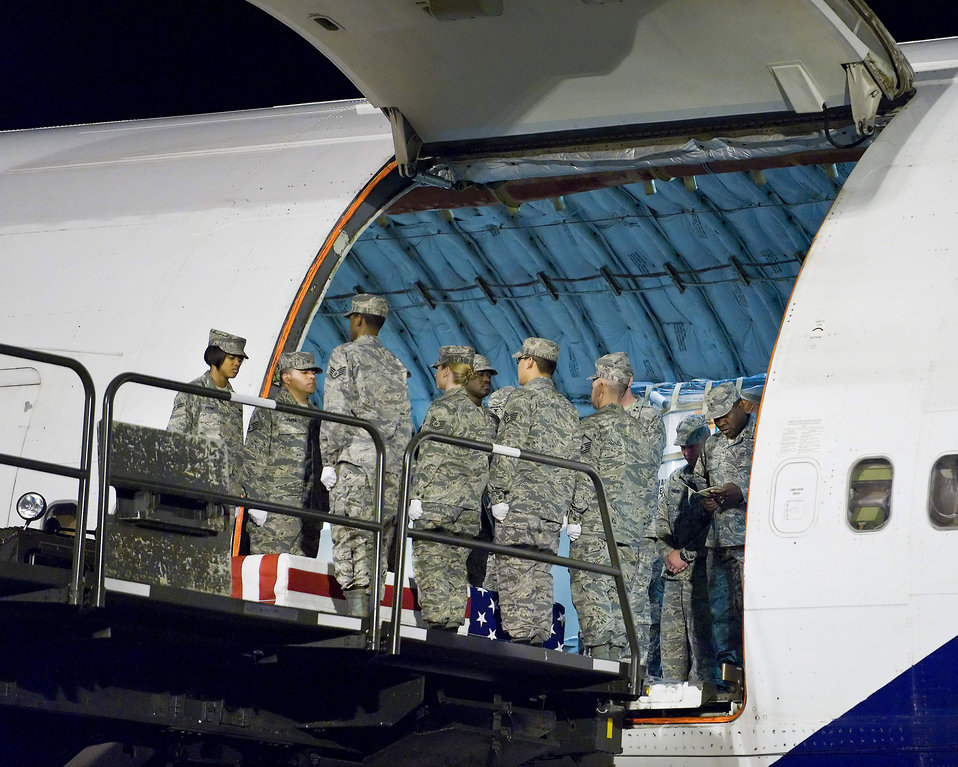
Dignified Transfer

An Air Force Mortuary Affairs Operations Center carry team transfers the remains of Air Force Staff Sgt. Phillip A. Myers, of Hopewell, Va., from an aircraft at Dover Air Force Base, Del., April 5. Sergeant Myers died April 4 near Helmand Province, Afghanistan, from wounds suffered from an improvised explosive device. He was assigned to the 48th Civil Engineer Squadron, Royal Air Force Lakenheath, United Kingdom. Sergeant Myers' family is the first to allow media to cover the dignified transfer under the new Department of Defense policy.